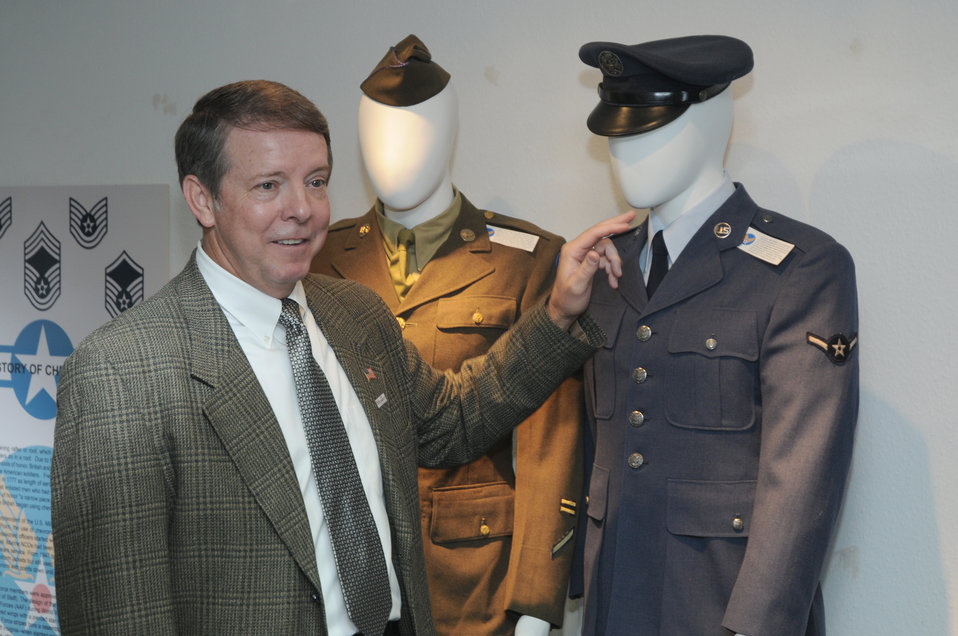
Chief McKinley visits Ramstein Airmen

Fifteenth Chief Master Sgt. of the Air Force Rodney McKinley admires displays at the U.S. Air Forces in Europe Enlisted Heritage Room July 26, 2010, during his visit to Ramstein Air Base, Germany.